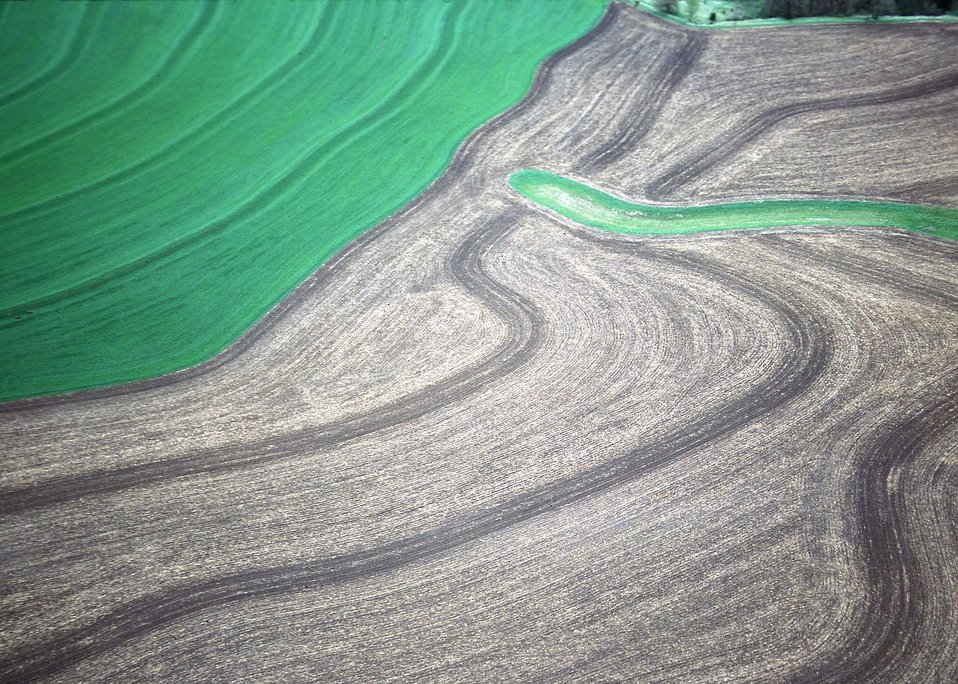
Aerial view on contour terraces and grassed waterways for erosion control. Kansas.